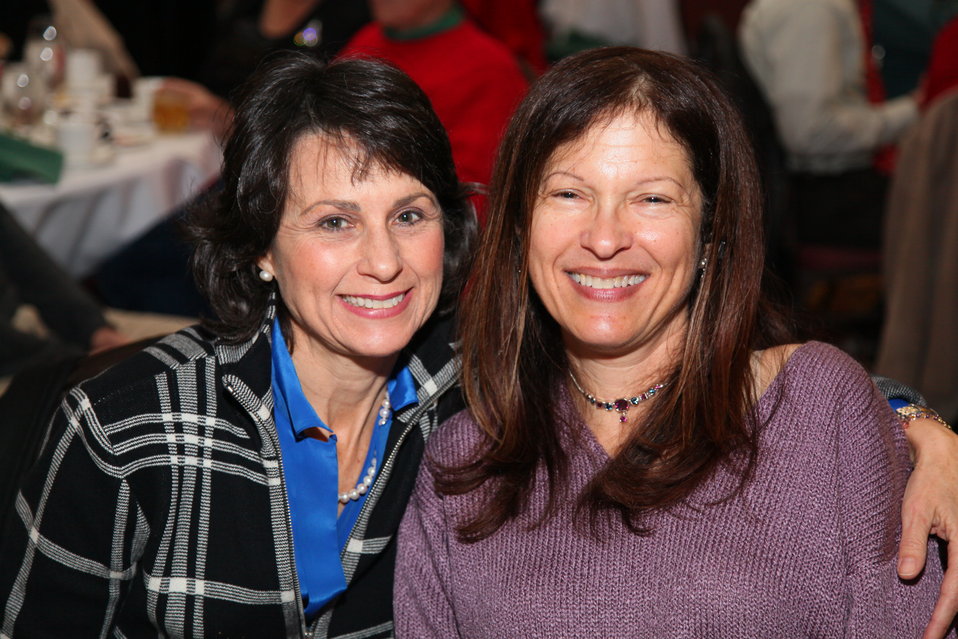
Sacramento District Holiday Party 2011